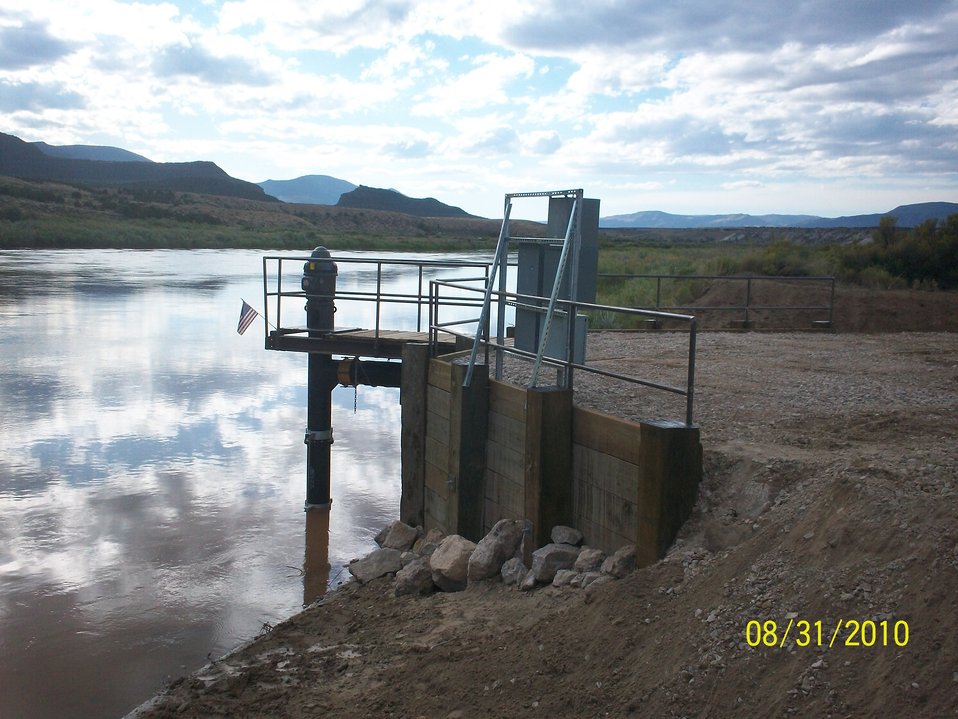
Browns Park Pump Structures

Four pumping stations were constructed along the Green River in Browns Park NWR. The pumps provide water to marshes and wetlands at the Refuge.